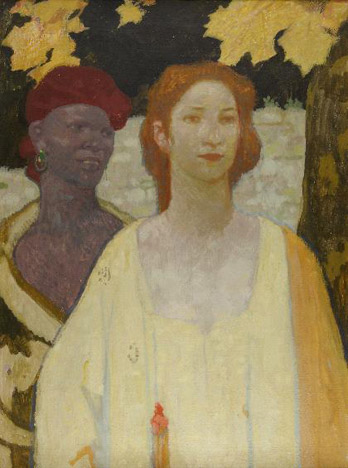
Unbetiteltes Gemälde, Öl auf Leinwand, 80 x 60